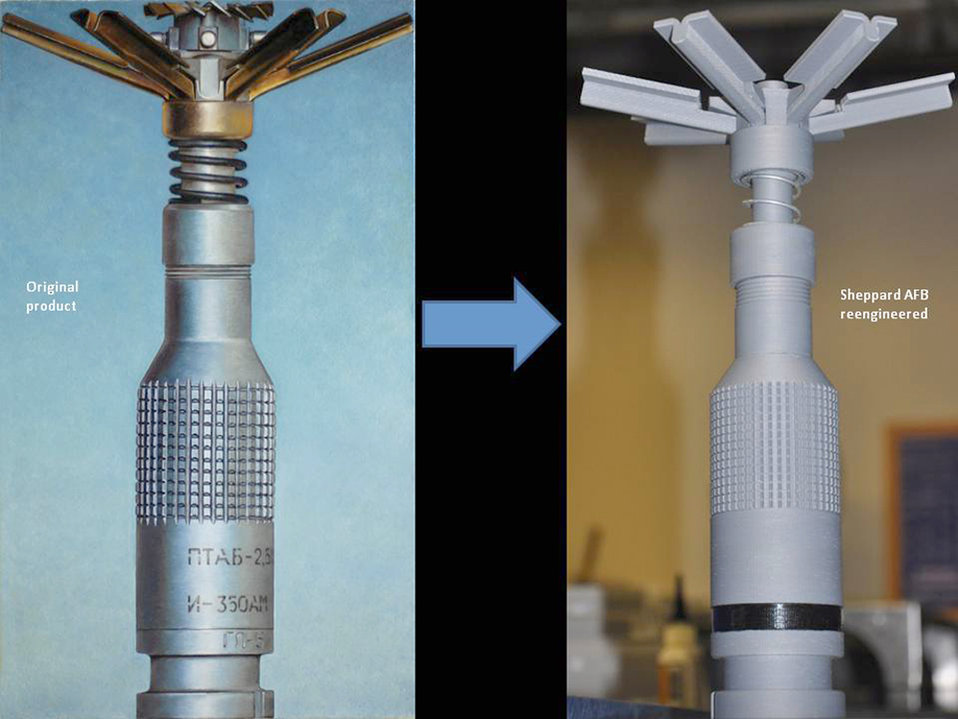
EOD training aids

A submunition is being replicated and detailed July 22, 2010, by the 982nd Maintenance Support Squadron at Sheppard Air Force Base, Texas, for use at an explosive ordnance disposal training facility. EOD training aids were fabricated with plastic and steel to make them look, weigh and feel like the original item. Details such as working springs, internal pieces, markings and bolts have been added to make training aids as detailed as possible.